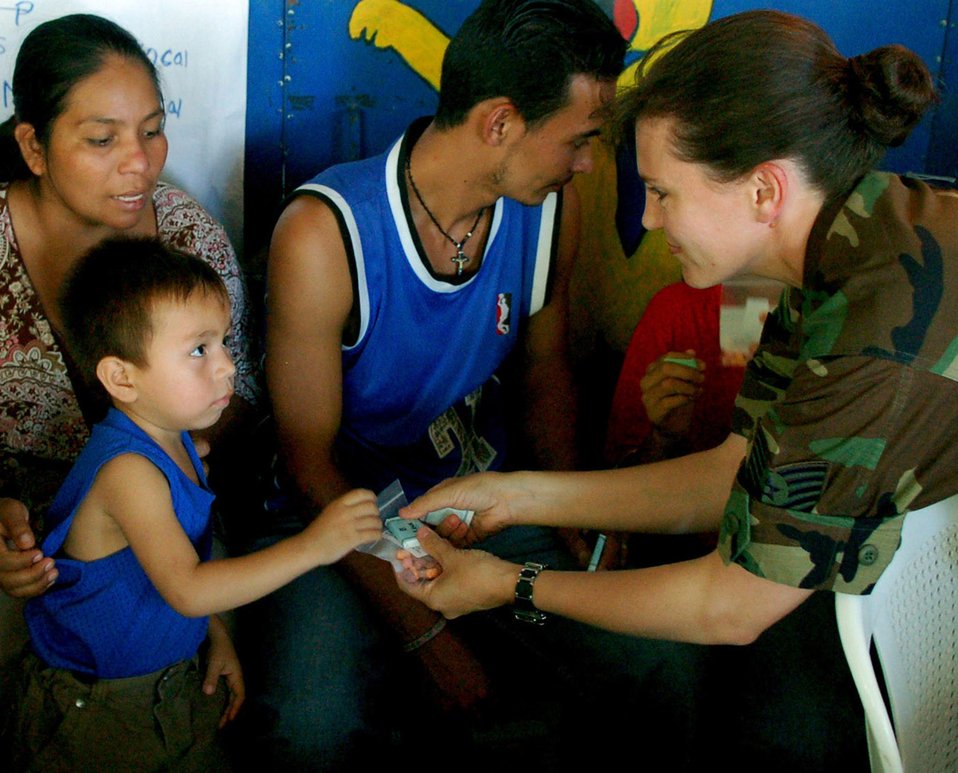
JTF-Bravo participates in El Salvador MEDRETE

Tech. Sgt. Angel Roush hands a bag of vitamins to a young Salvadorian boy Sept. 27 at a makeshift clinic in San Juan Opico, El Salvador, during a medical readiness training exercise. Sergeant Roush is a member of the Joint Task Force-Bravo Medical Element. JTF-Bravo members participated with the Salvadorian militaries in the exercise.